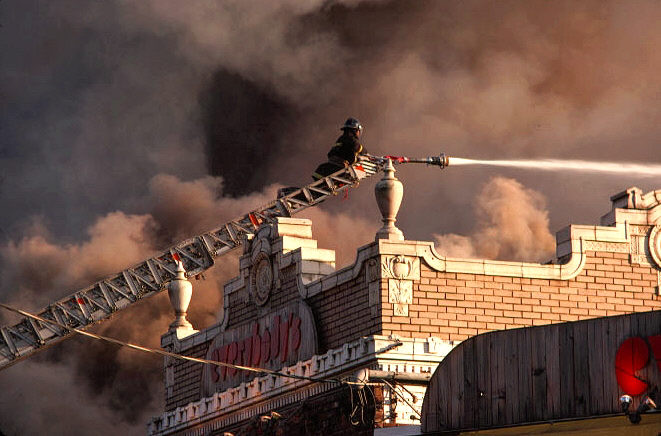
Burning building and firefighter at Emory Village, Atlanta, Georgia.